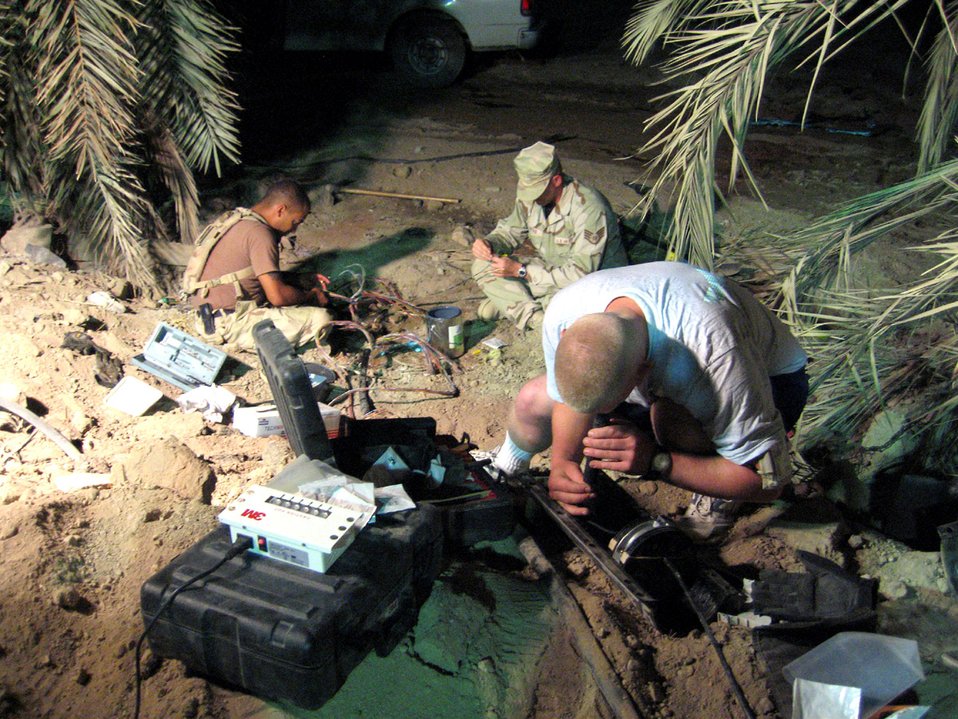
Dawgs get dirty, put PERSCO back online

ALI BASE, Iraq -- Senior Airman Michael Woods (front) uses a fiber inspection scope to check the quality of a fiber optic connection as Staff Sgts. Fernando Perez (left) and Paul Mattke work on the copper connections. They are assigned to the 407th Expeditionary Communications Squadron. Airman Woods and Sergeant Perez are deployed from Lajes Field, Azores, and Sergeant Mattke is deployed from Ellsworth AFB, S.D.